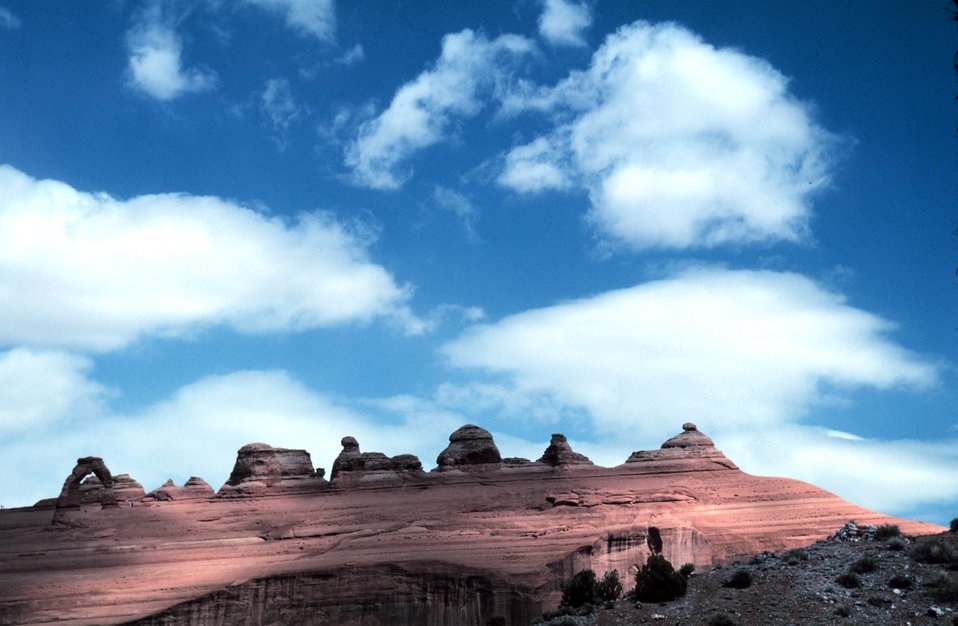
Colorado Plateau cumulus.